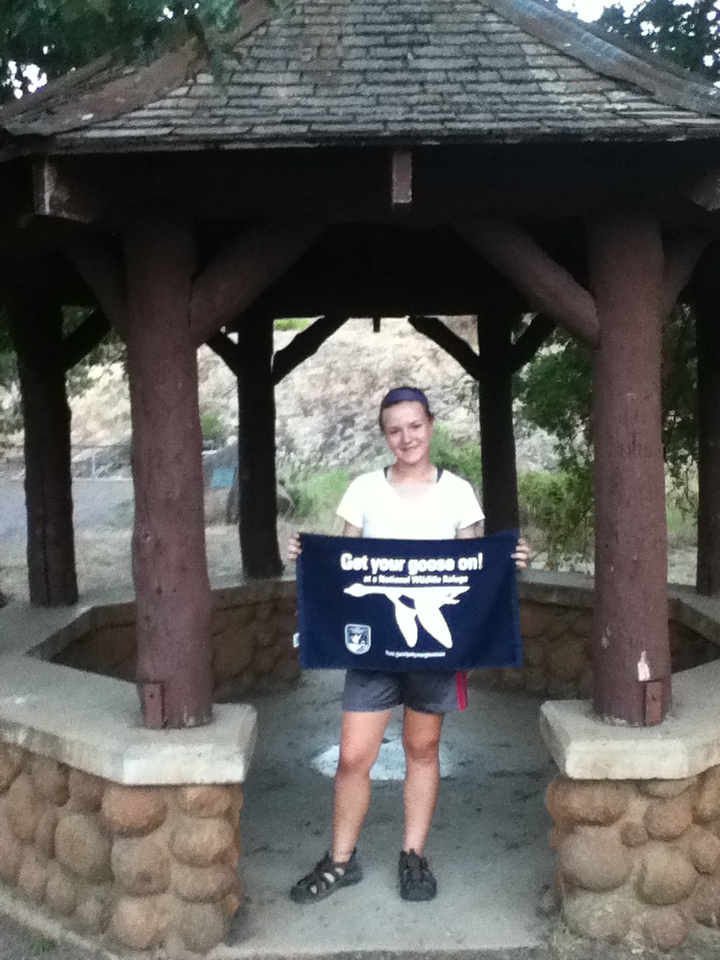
Get Your Goose On!

Wichita Mountains National Wildlife Refuge in Oklahoma.